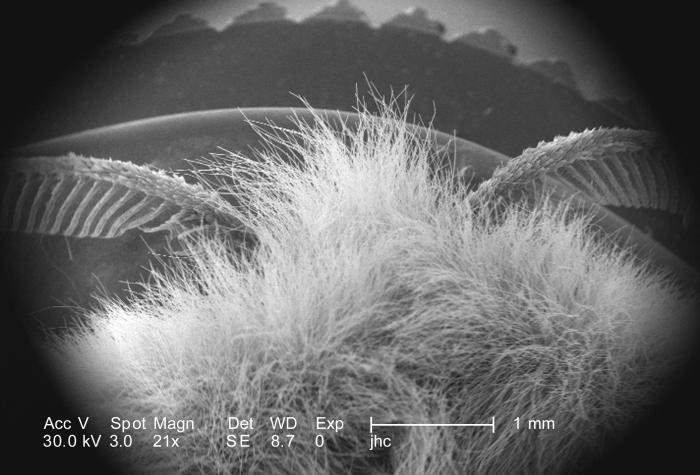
This scanning electron micrograph (SEM) depicted the crown of the head region of an unidentified white moth, which was found deceased on the ground in Decatur, Georgia. Under this low magnification of only 21X, both of the arthropod's antennae were partially visible.